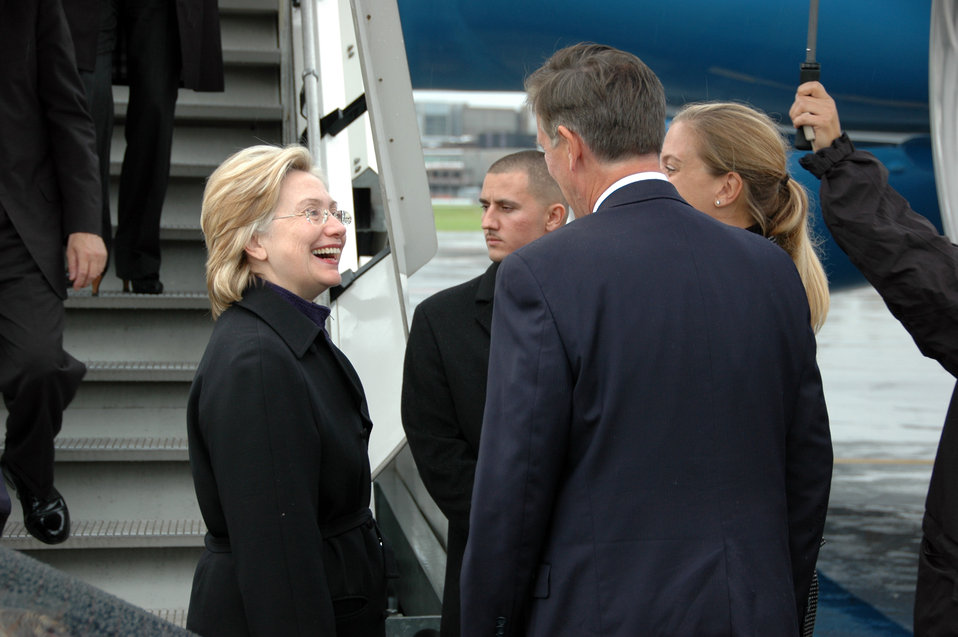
Secretary Clinton Arrives in Zurich

U.S. Secretary of State Hillary Rodham Clinton is greeted by U.S. Ambassador to Switzerland Donald S. Beyer and Ms. Alexandra Baumann (Federal Department of Foreign Affairs) during her arrival in Zurich, Switzerland October 9, 2009.